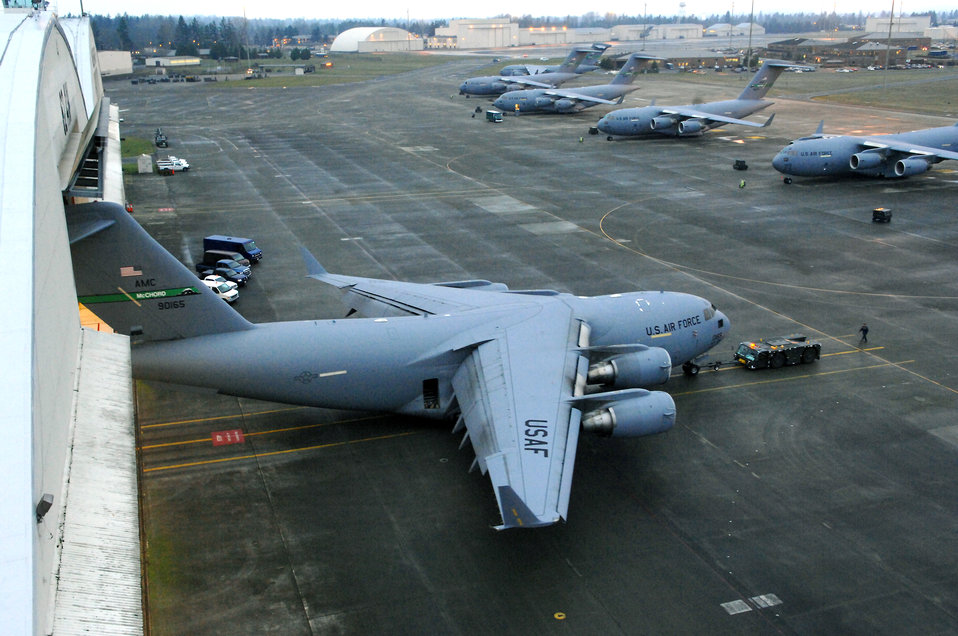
Global reach, global power

A C-17 Globemaster III is towed into a hangar using an MB-2 aircraft tow tractor Jan. 26 for a home station inspection at McChord Air Force Base, Wash. Airmen from McChord AFB provide airlift and aeromedical evacuation in support of the war on terrorism and other contingencies around the world.